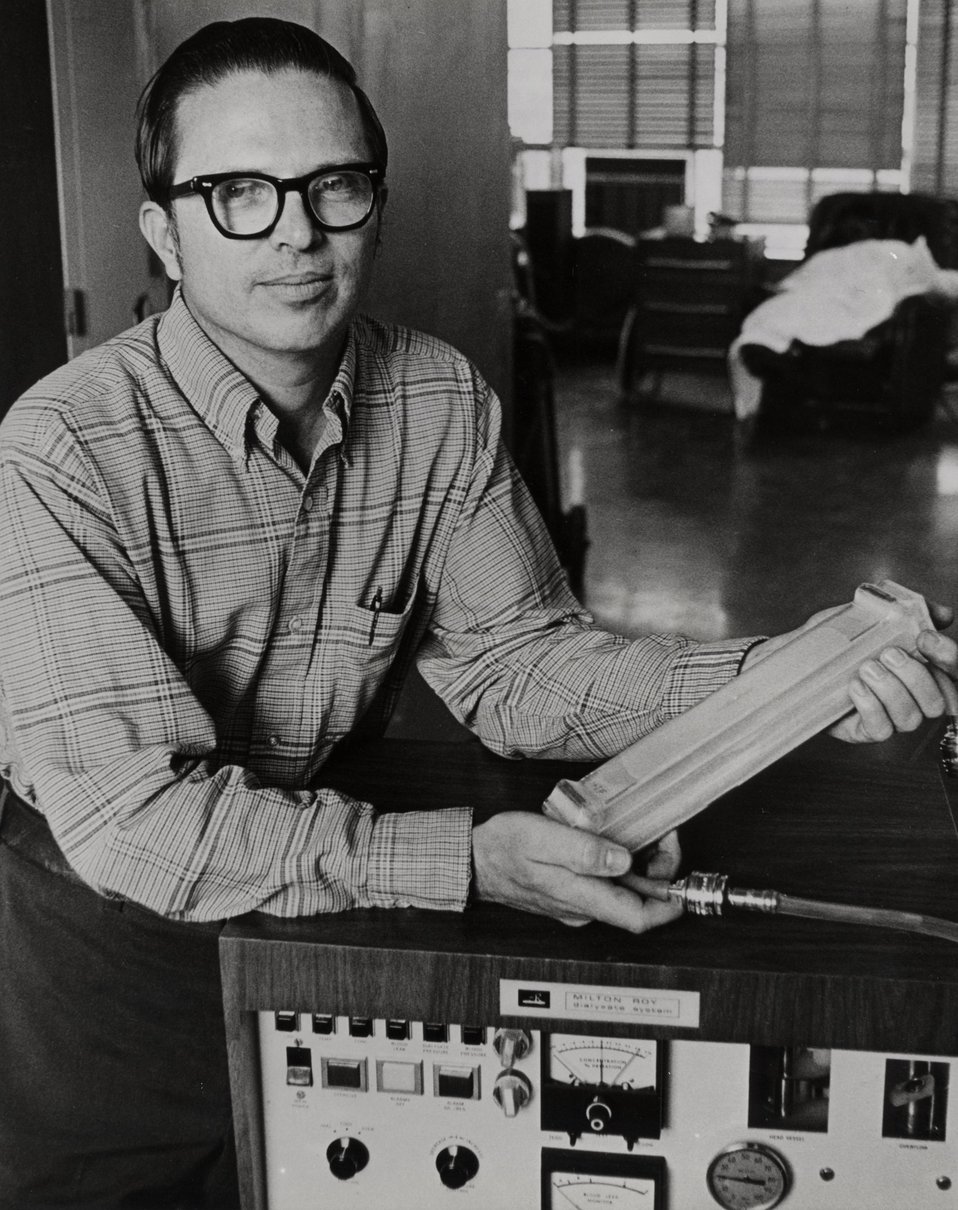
Finley Markley, Los Angeles, holds the artificial kidney he helped develop as an employee of the U.S. Atomic Energy Commission's Argonne (Illinois) National Laboratory. Circa 1973.